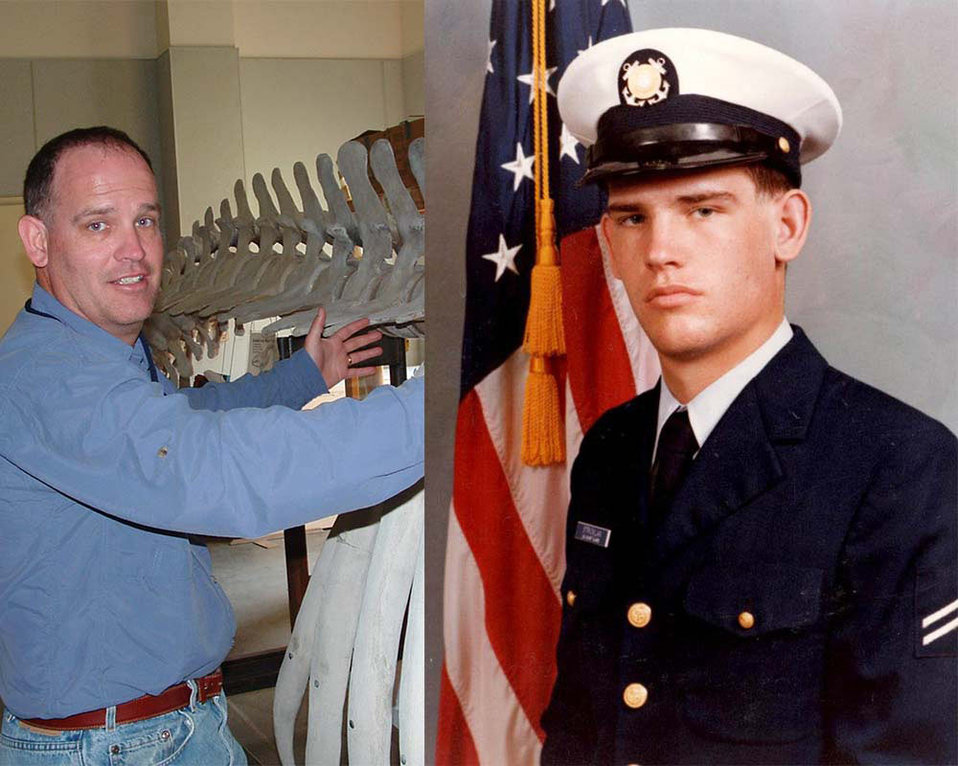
John Strickland--Southeast Region

John Strickland served in the U.S. Coast Guard from 1984 until 1991 in communications. His duty stations included the U.S. Coast Guard Cutter Mellon, home ported in Seattle Washington, Coast Guard Communications Station, Honolulu, Hawaii, and the Search and Rescue Coordination Center in Seattle, Washington. John joined the U.S. Fish and Wildlife Service in 2004 in Alaska and is currently the Refuges Facilities Branch Chief in the regional office in Atlanta.